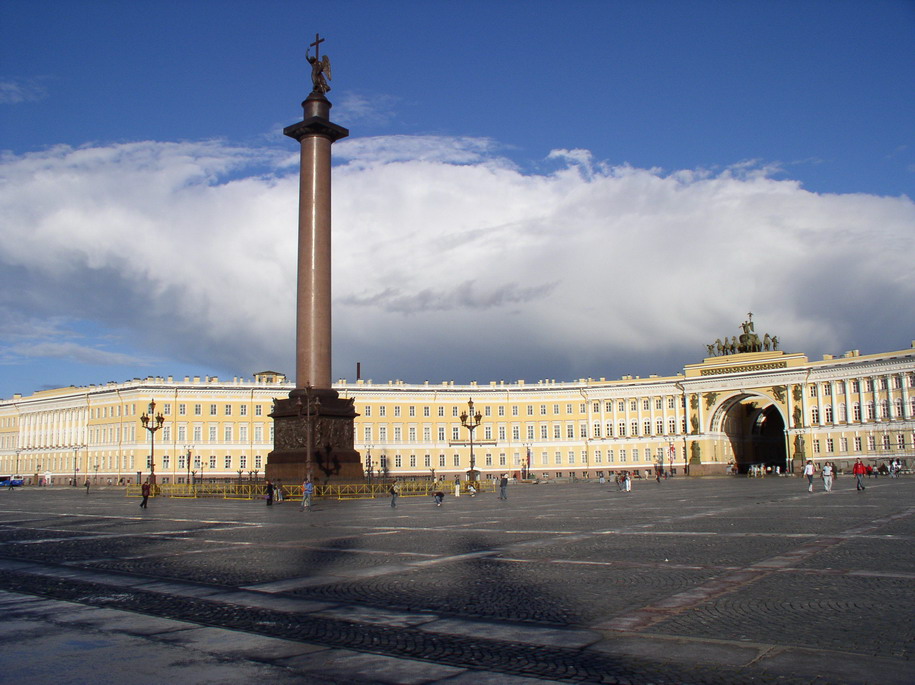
PalaceSquare